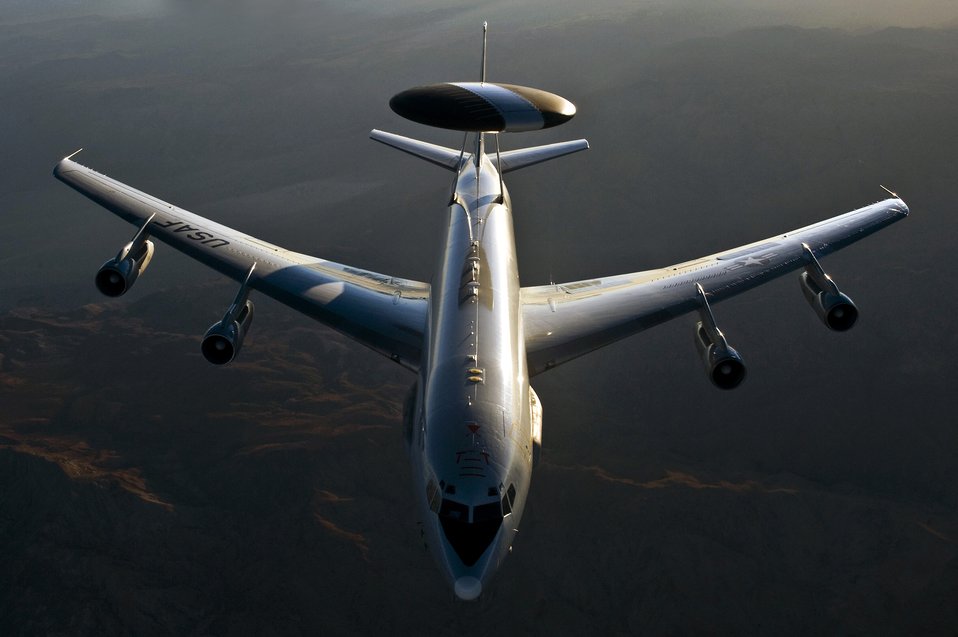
Air Controller

An E-3 Sentry flies over the National Training Center at Fort Irwin, Calif., Aug. 16, 2011, during Green Flag-West 11-9. The E-3 is assigned to the 965th Airborne Air Control Squadron at Tinker Air Force Base, Okla.